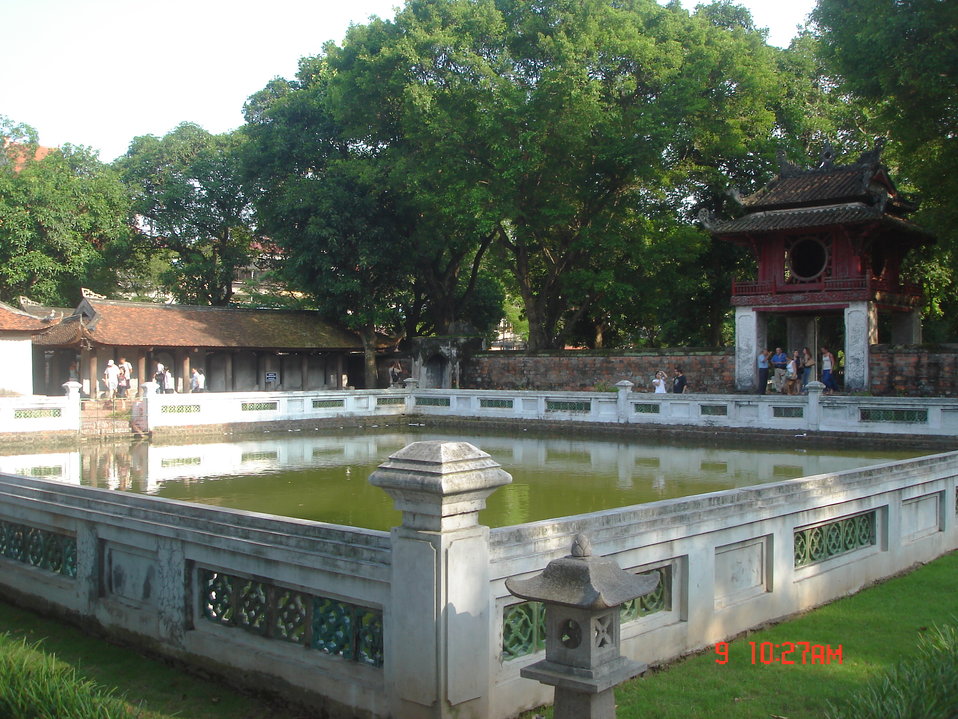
Deutsch: Brunnen des himmlischen Lichts